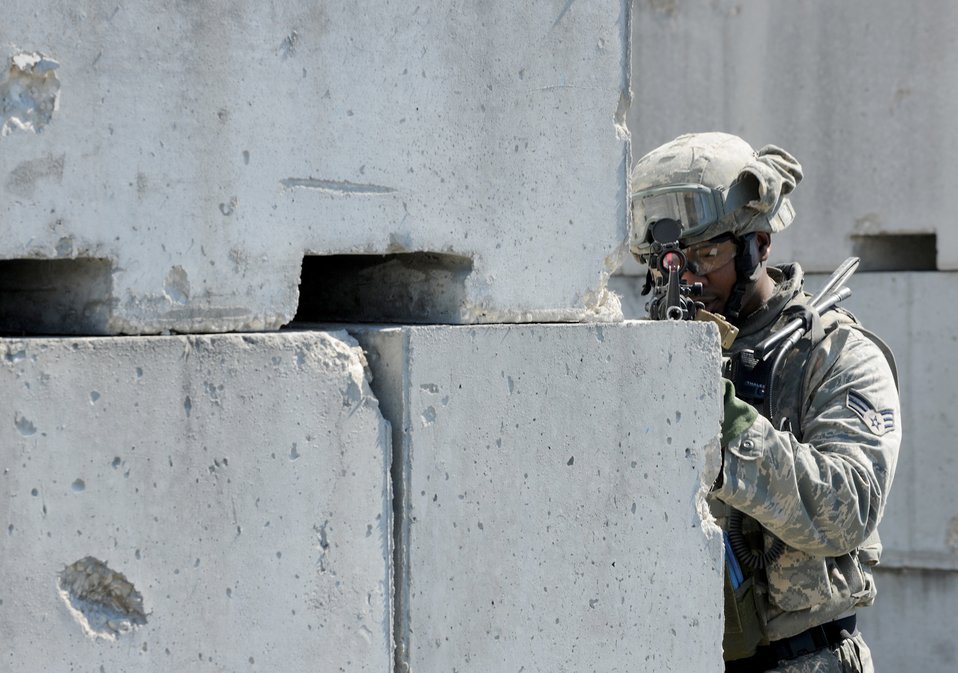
In the cross hairs

Senior Airman Steven Smith takes aim Feb. 15, 2011, during joint exercise Atlantic Strike 11-01 at Avon Park Air Force Range, Fla. Airman Smith is assigned to the 823rd Base Defense Squadron.